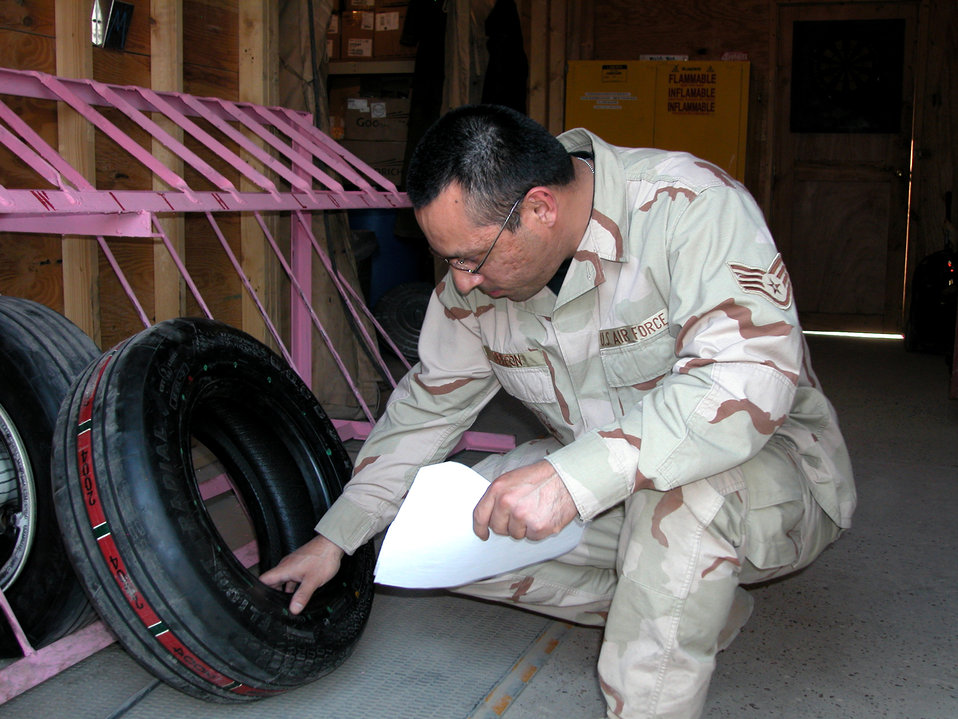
Transient alert maintainers provide critical mission support

Staff Sgt. Ernest DeLeon checks an F-16 Fighting Falcon tire in the 332nd Expeditionary Maintenance Squadron's Crash Recovery, Wheel and Tire shop at Balad Air Base, Iraq. Airmen in the shop work on about 30 wheels a week. Sergeant DeLeon is deployed from the 35th Maintenance Squadron, Misawa Air Base, Japan.